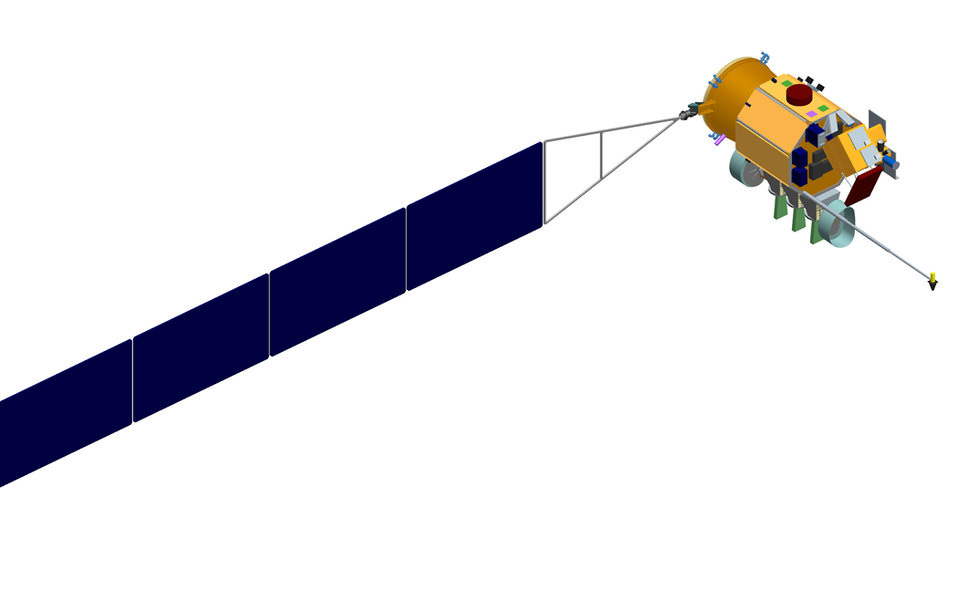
CLARREO satellite

One of the three CLARREO satellites, which will make observations of the energy the Earth absorbs from the sun and radiates back into space. The balance between them affects the climate.